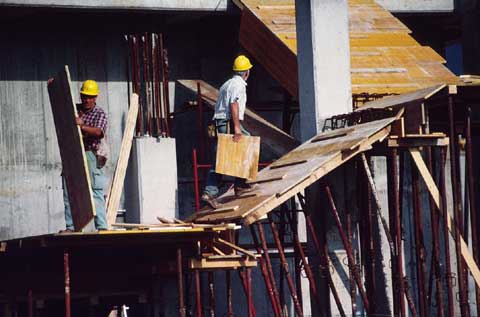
Aviano buildup

The Aviano Air Base, Italy, buildup in 2000 was a windfall for the local economy. Most of the skilled masons and other construction workers in the region worked at the base.